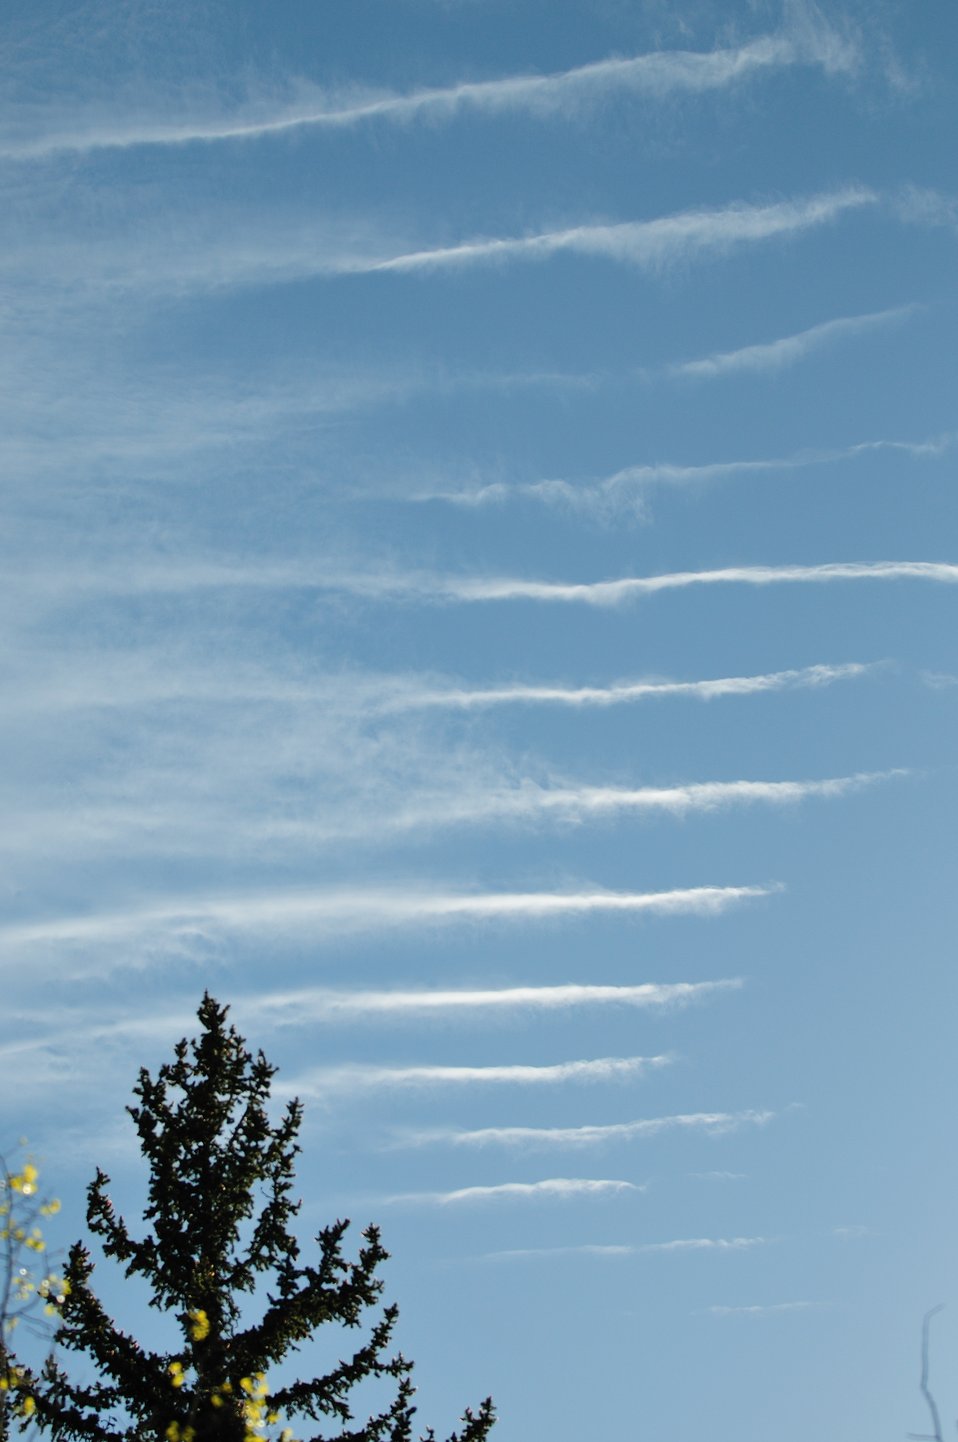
Gravity wave clouds forming over the Front Range of the Rocky Mountains.